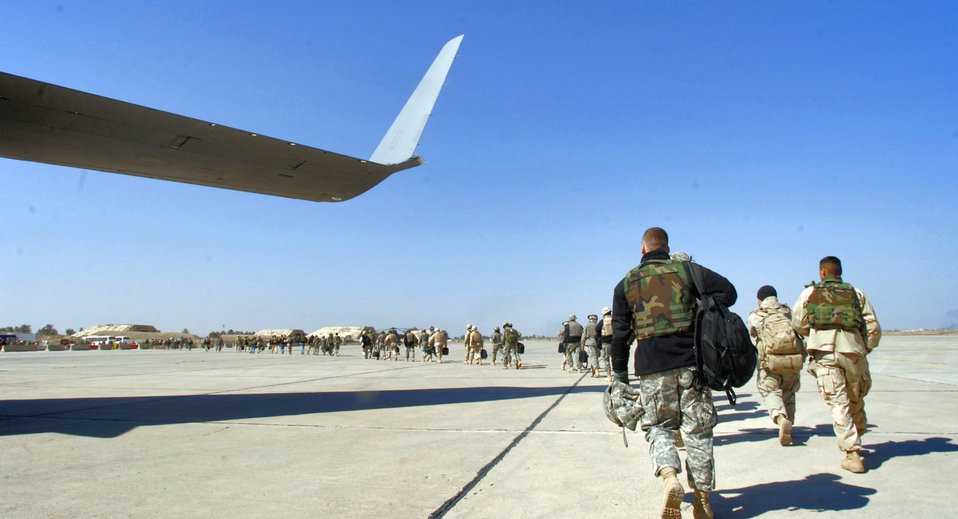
Troop movement

Personnel arrive at Sather Air Base, Iraq, Saturday, Feb. 18, 2006.